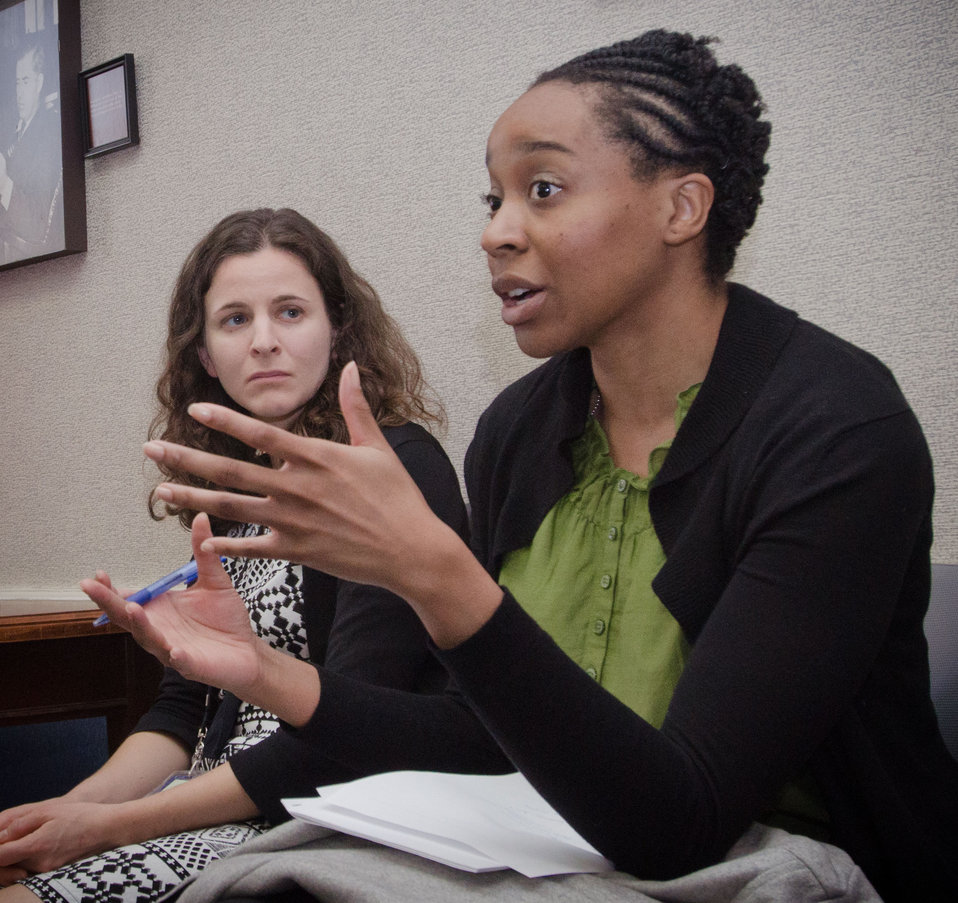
White House's Camilla Ihenetu made comments about possible opportunities with National CARES Mentoring Movement founder and Editor-in-Chief Emeritus, Essence magazine, Susan Taylor, while at the Department of Agriculture in Washington, D.C., on Tuesday, February 28, 2012. CARES is a not-for-profit organization dedicated to recruiting and connecting mentors with local youth-serving and mentoring organizations to help guide under-resourced children to academic and social success across the country.
This discussion provides a continuation of the White House Policy in Action conference that took place in November 2011. The focus of the discussion was about how existing federal programs and Administration priorities can be leveraged with her organization, especially as it relates to science, technology, engineering and mathematics (STEM) literacy, education and rural youth.